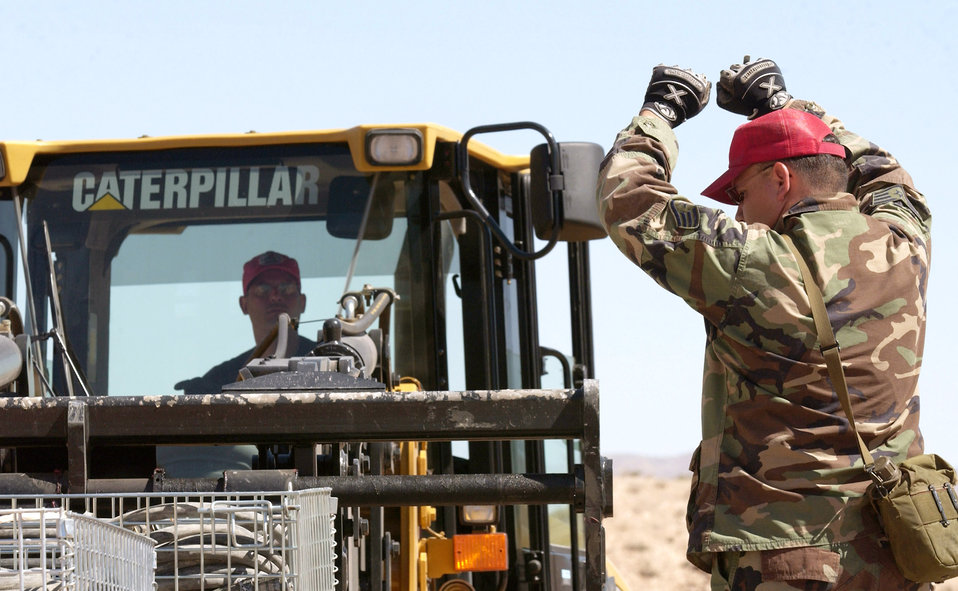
Red Horse in action

Tech. Sgt. Jeremy Hamilton receives marshaling instructions from Staff Sgt. Jeff Ray during a bare-base build-up exercise at Nellis Air Force Base, Nev., April 8 to 9, 2006. The operation consisted of beddown and construction operations for 120 Airmen. The camp had a mobile field kitchen with generators, reverse-osmosis water purification unit and field latrine equipment. Both Airmen are with the 555th Red Horse Civil Engineer Squadron.